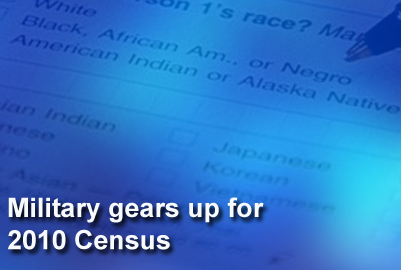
Census